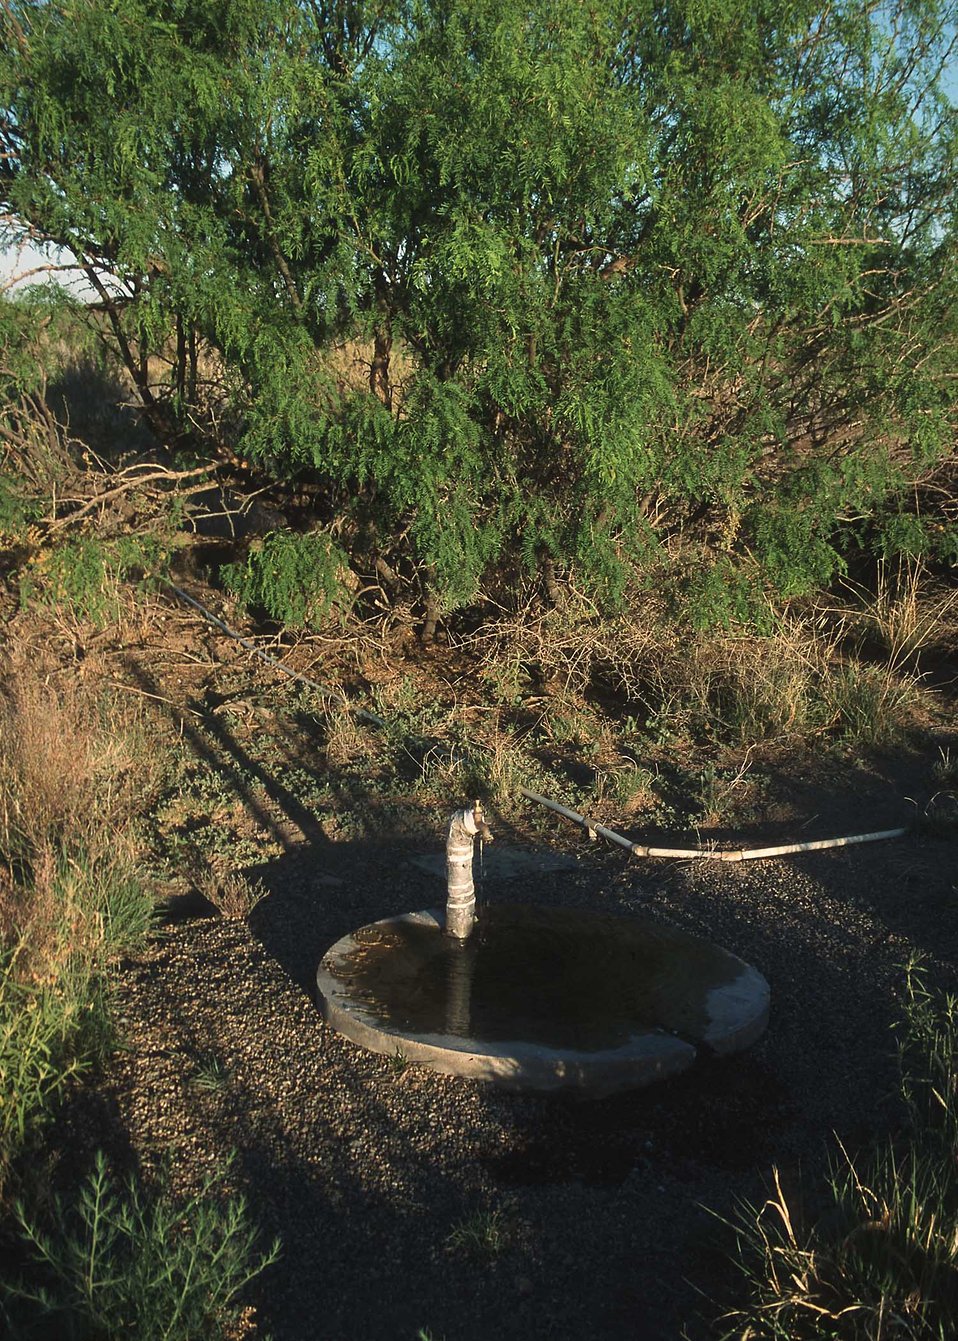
Wildlife watering area in rangeland in southern New Mexico.